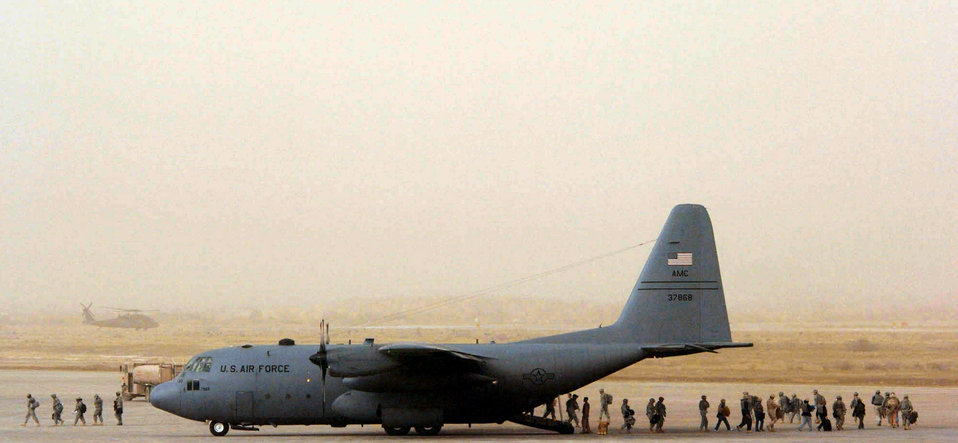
Now boarding

Personnel supporting Operation Iraqi Freedom load onto a C-130 Hercules during a dust storm Jan. 30 at Sather Air Base, Iraq. Sather AB is located on the west side of Baghdad International Airport and base Airmen move 6,200 passengers weekly and more than 1,700 tons of cargo weekly.